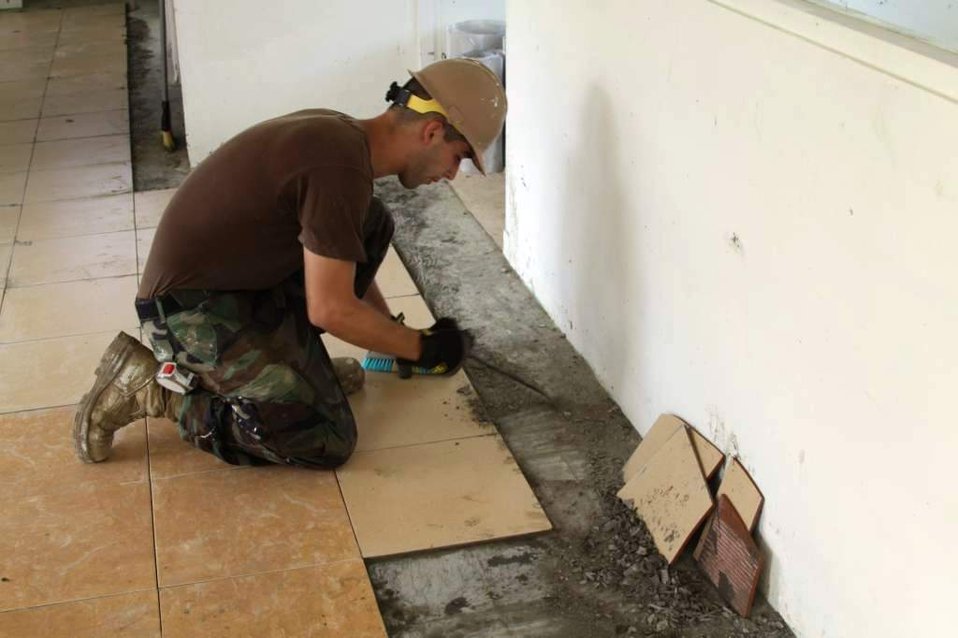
Cosntructionman Builder Jose Rivera Prepares the Ground To Lay Tile in the In-Patient Ward

Constructionman Builder Jose Rivera, assigned to Naval Mobile Construction Battalion 11 out of Gulfport, Mississippi, prepares the ground to lay tile in the in-patient ward of the Daruba Hospital engineering site on July 12, 2010, in Morotai, Indonesia. The engineering project is part of Pacific Partnership 2010, the fifth in a series of annual U.S. Pacific Fleet humanitarian and civic assistance endeavors to strengthen regional partnerships.